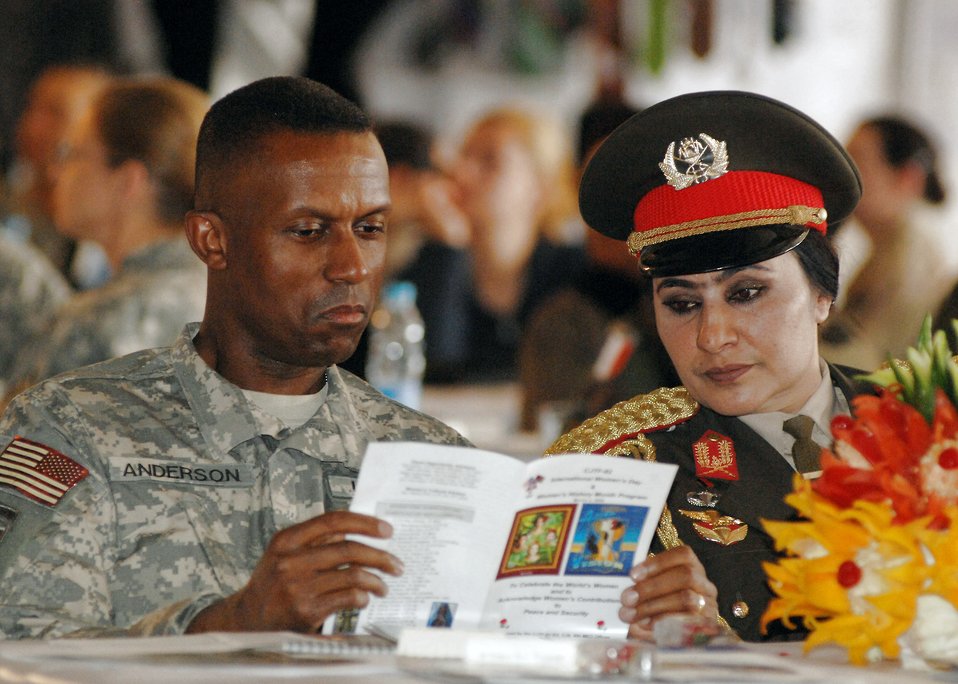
Bagram hosts International Women's Day

Army Brig. Gen. Rodney Anderson and Afghan national army Brig. Gen. Khatool Mohammadzai look through a program during the International Women's Day held March 3 at Bagram Air Base, Afghanistan. Hundreds turned out to the festivities and celebrated the world's women and acknowledged women's contributions to peace and security. General Anderson is the Combined Joint Task Force-82 deputy commanding general-support.